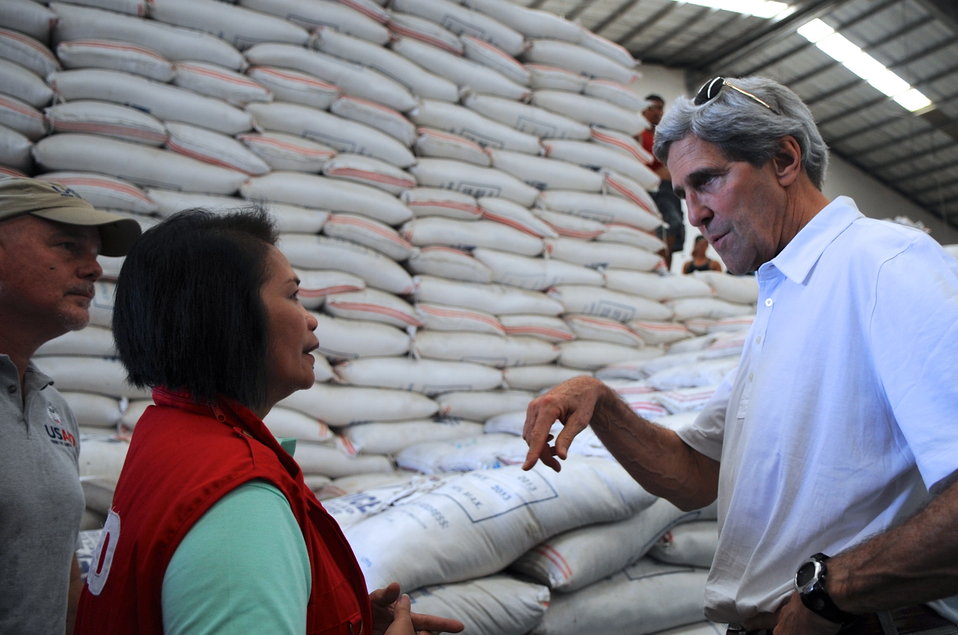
Secretary Kerry Discusses Rice-Distribution Efforts at the Tacloban City Welfare Distribution Center

U.S. Secretary of State John Kerry speaks with an aid worker about rice distribution efforts in the aftermath of Typhoon Haiyan as he visits the Welfare Distribution Center in Tacloban City, Philippines, on December 18, 2013.